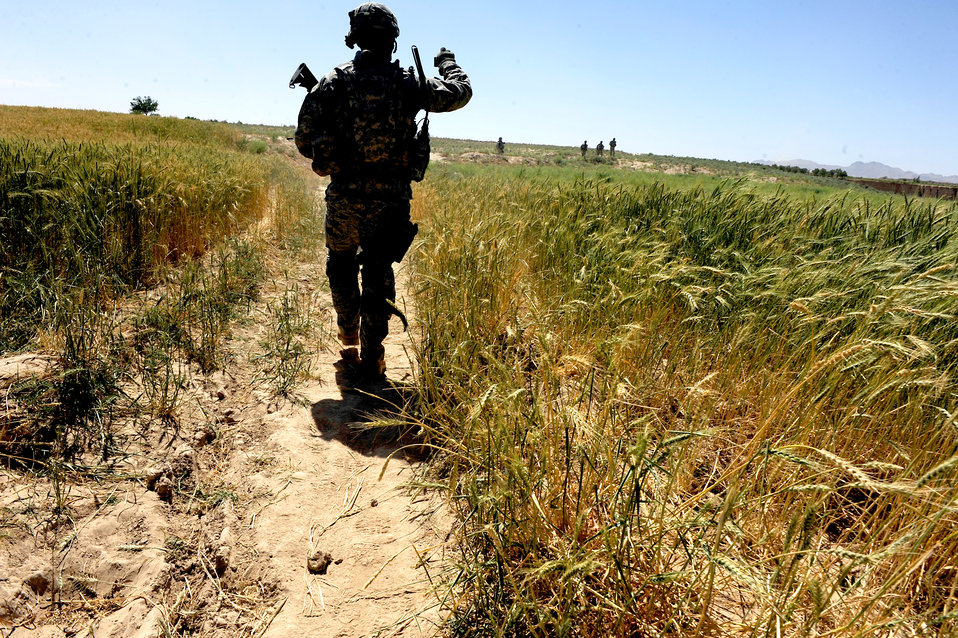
Operation Enduring Freedom

Airmen and Soldiers assigned to Provincial Reconstruction Team Zabul leave Khaleqdad Khan village and head back to their vehicles May 24, 2010, near Khaleqdad Khan, Afghanistan.